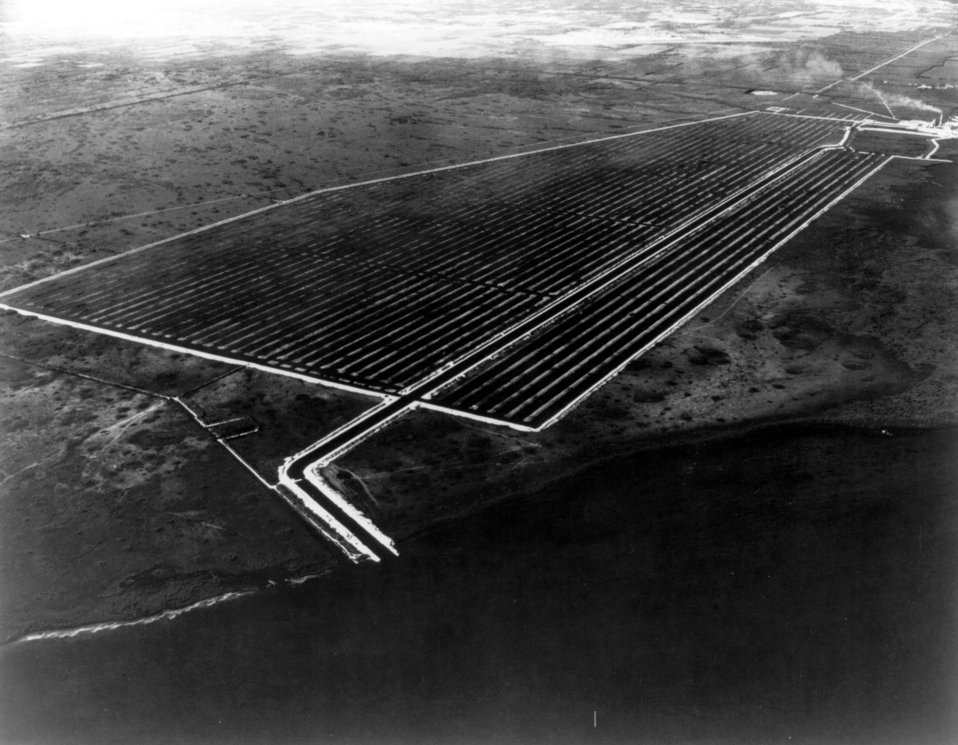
Turkey Point...A view looking to the North and West of Florida Power & Light Company's cooling canal system at its Turkey Point generating station in Dade County. A total of 168 miles of parallel canals made up the system. The plant in upper right hand corner. Circa 1974.